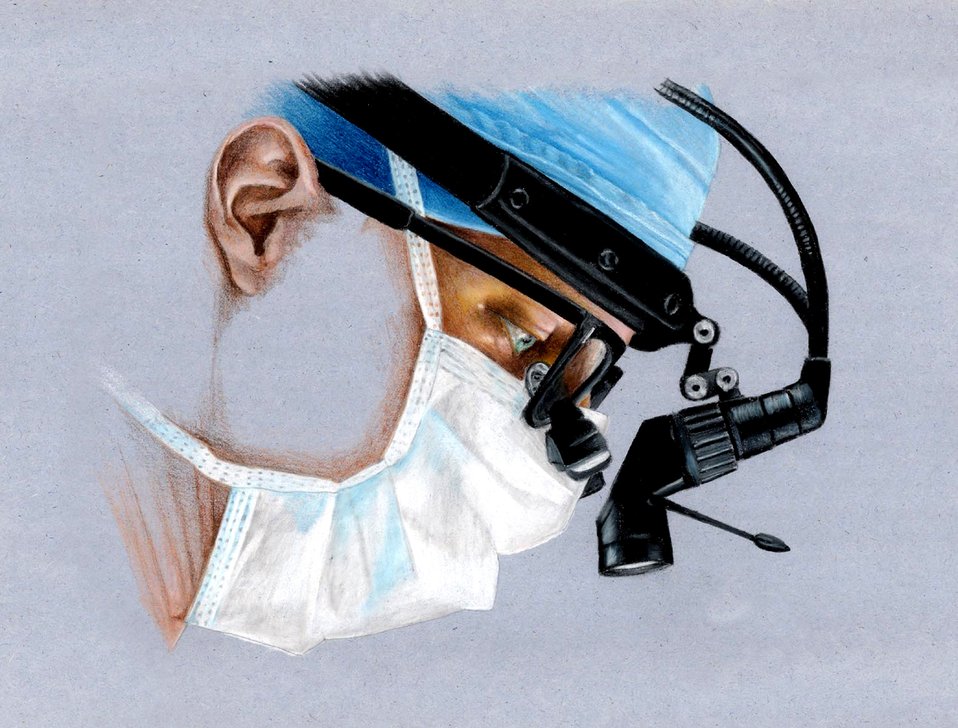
Pencils and scalpels: Artists help providers illustrate the cure

Illustration of a surgeon at work.